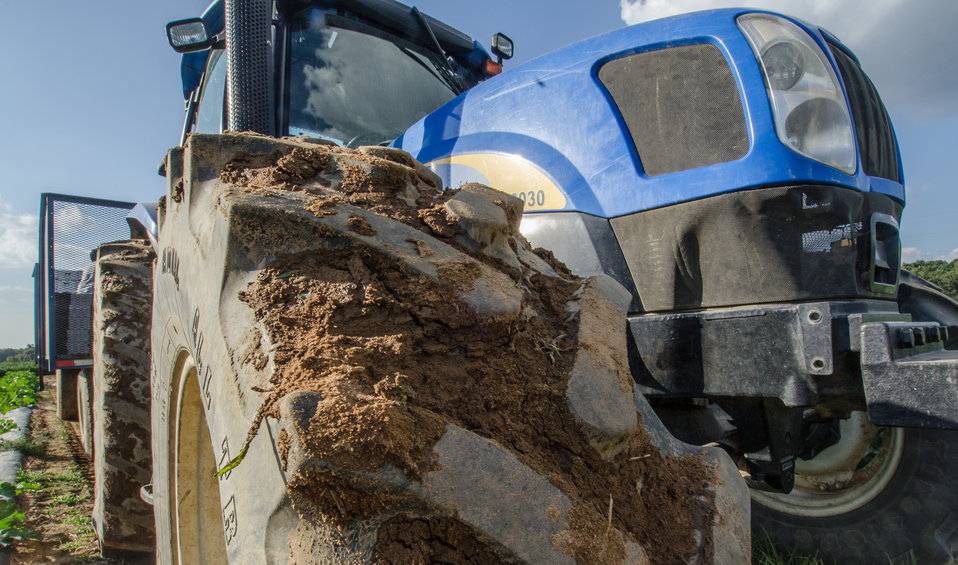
A tractor stops for a moment between rows of green zucchini squash at Kirby Farms, in Mechanicsville, VA, on Friday, Sept 20, 2013.
Kirby Farms is a third-generation family farm that covers 500 acres, and generates produce and grains on a year-around operation. The various stages of leaf, flower, and fruit can be seen on this one plant with an immature squash nearly ready for harvesting. Markets prefer the squash to be approximately eight inches in length when they are tender. Full-grown squash reach three feet in length and are more fibrous. Some recipes call for zucchini blossoms to be stuffed, fried, or baked, added to a soup, or used as a garnish over a meal. Kirby Farms devotes 200 acres of the farm to eggplant, spinach, beets, tomato, jalapeno peppers, melons and a variety of greens. Soybeans and small grain are grown on the remaining 300 acres. The fertile Virginia soil and their management practices, allows Kirby Farms to double and triple crop fields with rotational crop selection. Wholesalers, who buy from this farm, sell the produce to major supermarkets in the Mid-Atlantic region, from North Carolina to Maryland. Restaurateurs in the local area prepare and serve their harvest to patrons in the Greater Richmond Region.